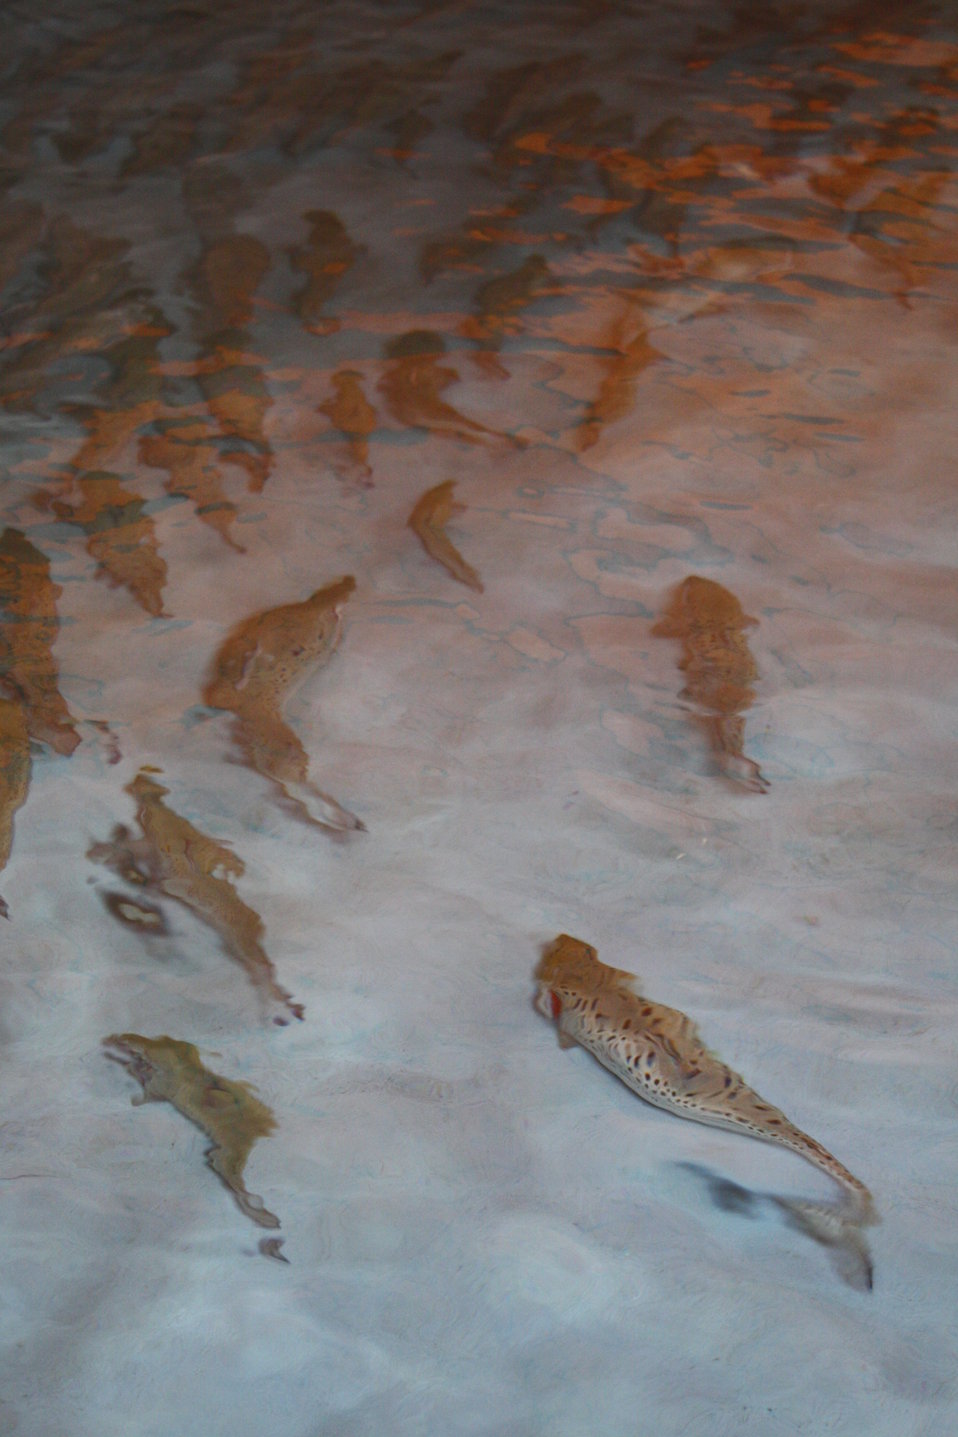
Salmon in circular fish rearing pool at White River National Fish Hatchery

Atlantic salmon in circular pool at White River National Fish Hatchery.